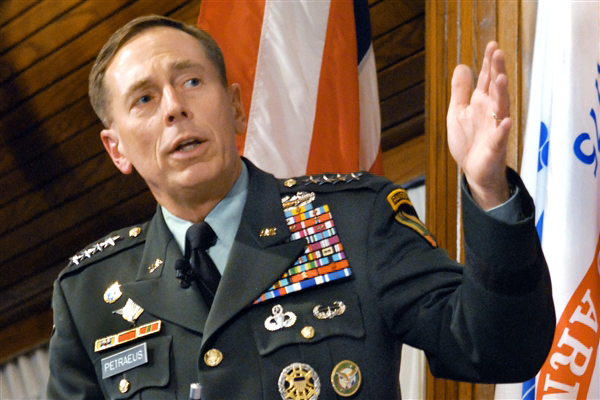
General Petraeus cites need for critical warfighting specialties

Army Gen. David H. Petraeus explains his leadership strategy during a leadership and counterinsurgency symposium at the National Press Club in Washington, D.C., Sept. 23, 2009. General Petraeus is the commander of U.S. Central Command.